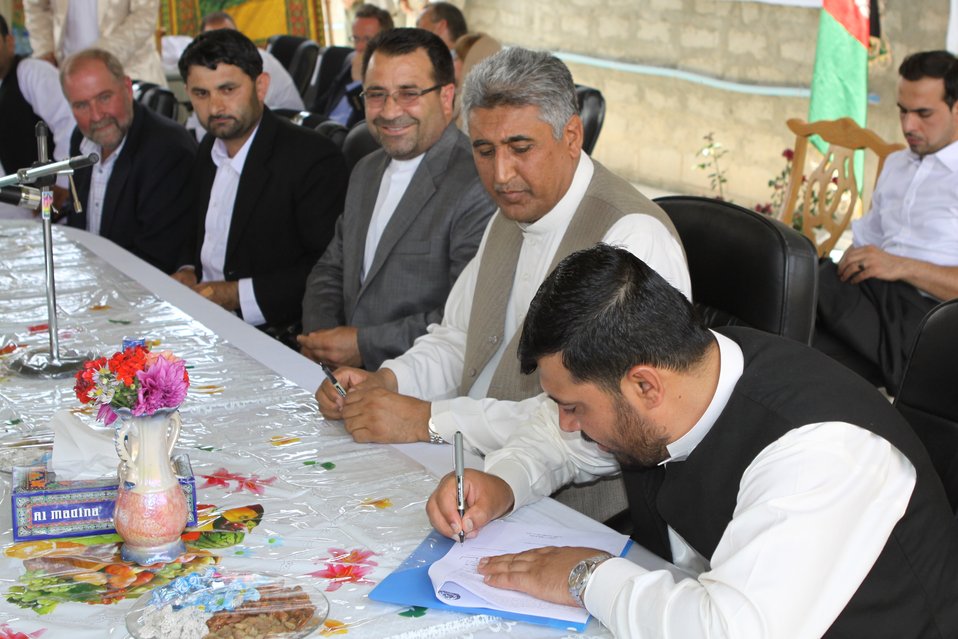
Bolan Poultry Farm